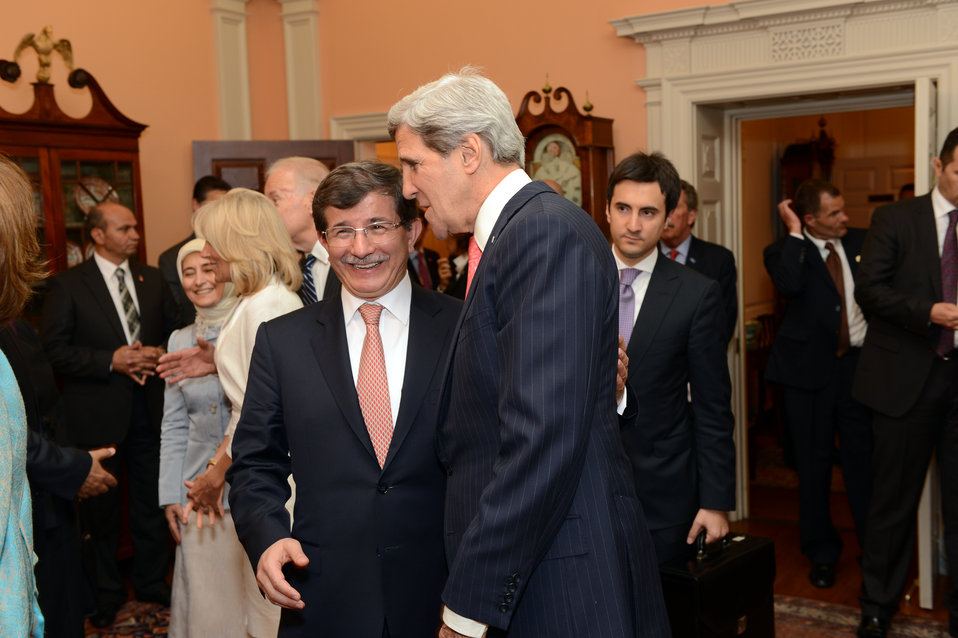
Secretary Kerry Chats With Turkish Foreign Minister Davutoglu

U.S. Secretary of State John Kerry and Turkish Foreign Minister Ahmet Davutoglu chat before a lunch in honor of Turkish Prime Minister Recep Tayyip Erdogan at the U.S. Department of State in Washington, D.C., on May 16, 2013.